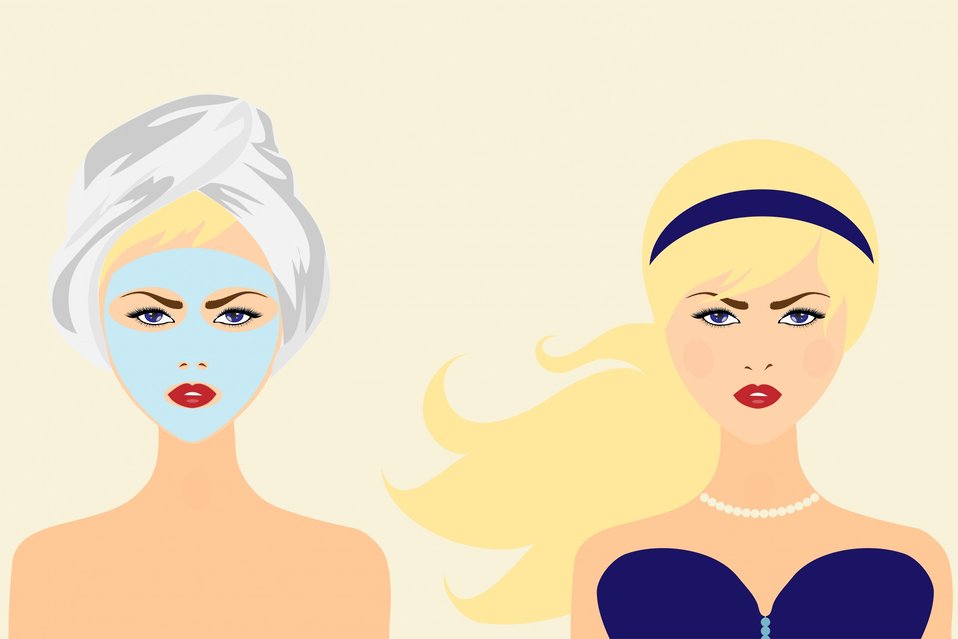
Face mask woman beautiful

Beautiful blond woman before and after beauty treatment face mask.